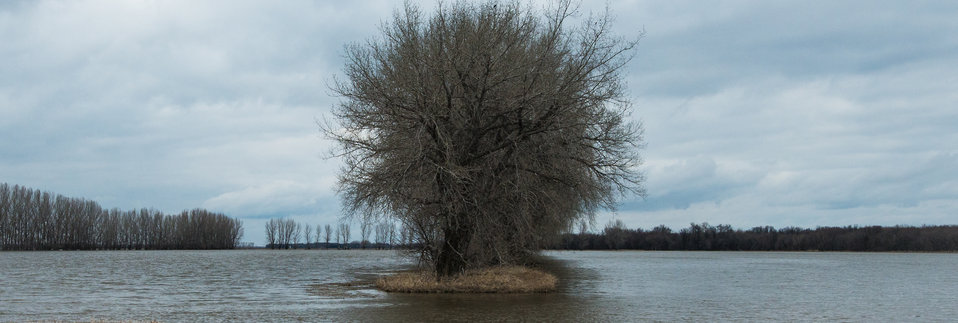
Trees that normally form windbreaks to reduce wind based soil erosion, now stand to define flooded farmsteads along the Red River; part of the Red River basin, in North Dakota, on Wednesday, May 1, 2013. To learn about the Red River Basin Initiative, see www.mn.nrcs.usda.gov/news/features13/RRBI.html.